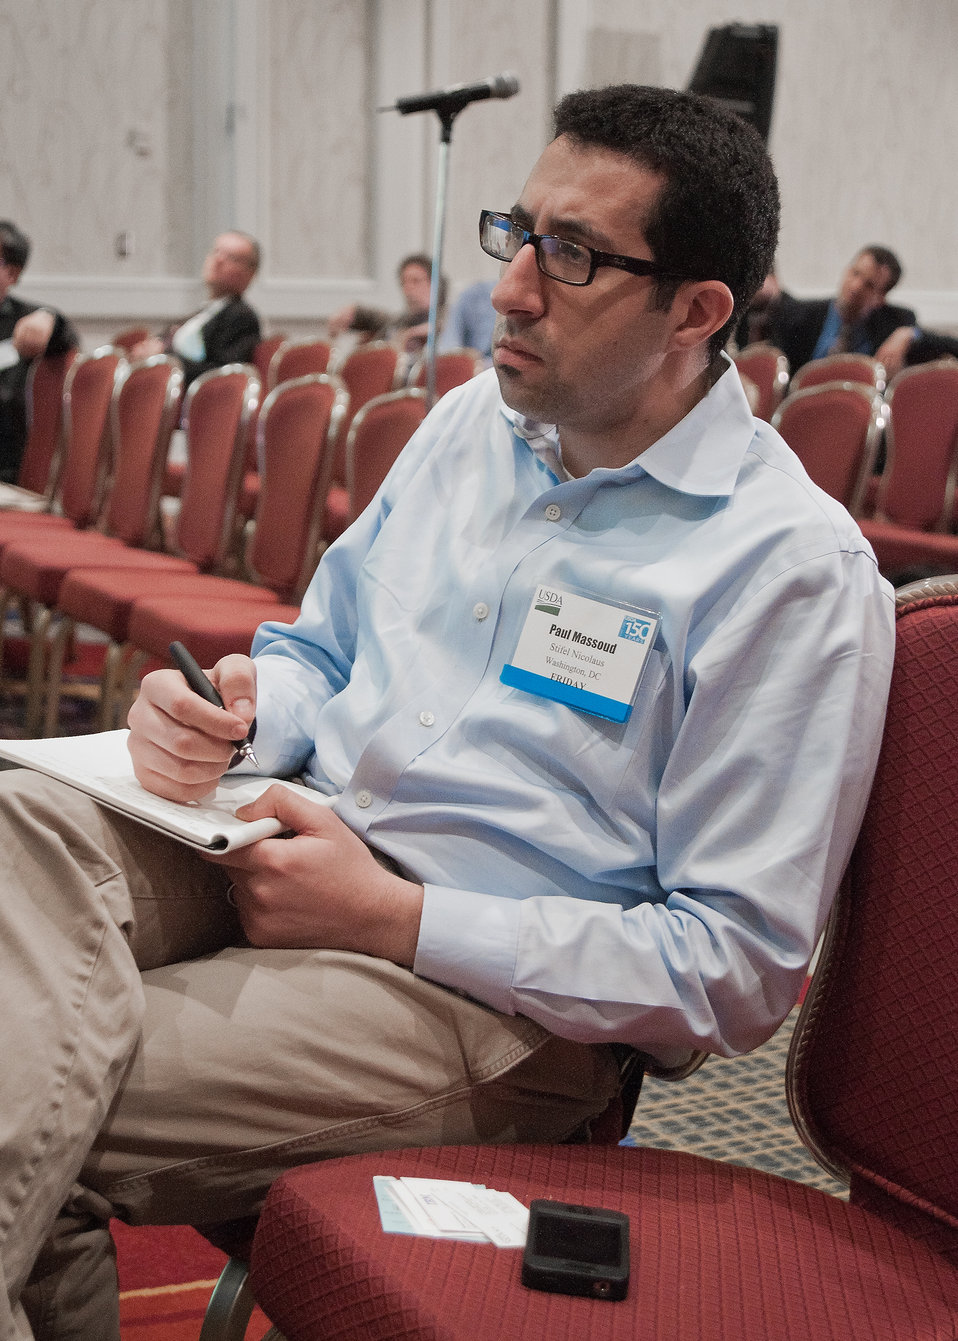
Paul Massoud, CFA, Vice President Stifel Nicolaus Equity Research Washington, D.C., questioned speakers at the Agricultural Financial Markets and Investment afternoon breakout session at the 2012 Agricultural Outlook Forum, “Moving Agriculture Forward, Growing, Innovating and Celebrating 150 Years” held at the Crystal gateway Marriott Hotel Arlington, Virginia, Friday, February 24, 2012. Massoud attended the forum to get a better understanding of farm income and the ability to spend money on inputs. The session focused on patterns of financial investment in United States agricultural assets, changes in types of lenders serving the agriculture sector and the economics of land prices.